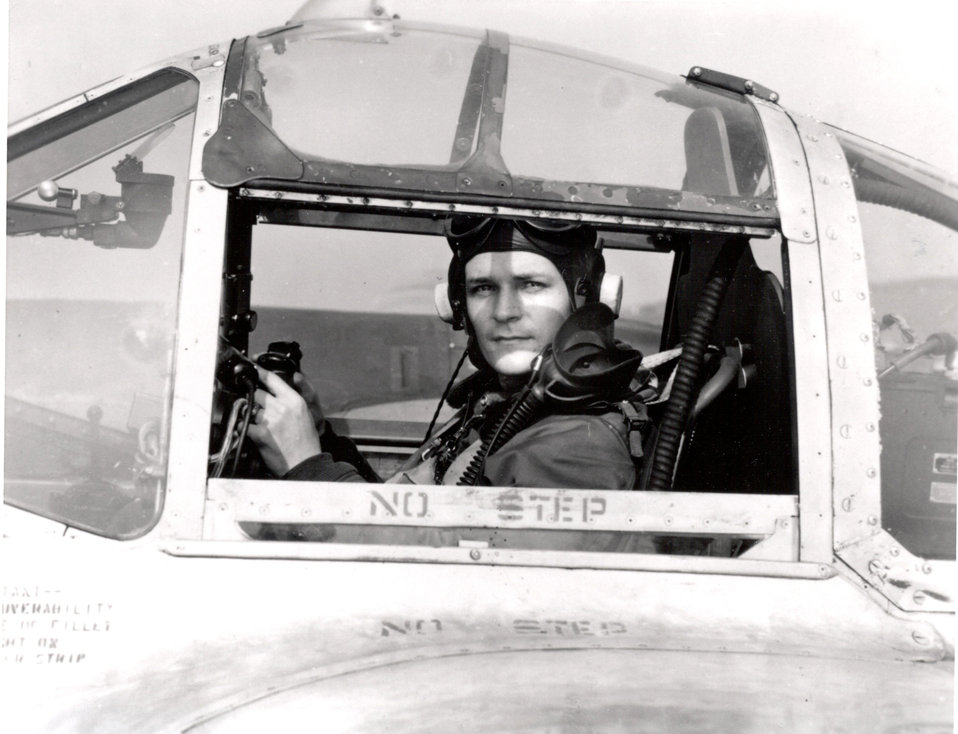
Air Force legend passes away at 86

Brig. Gen. Robert F. McDermott flew 61 combat missions while serving in the European theater during World War II.